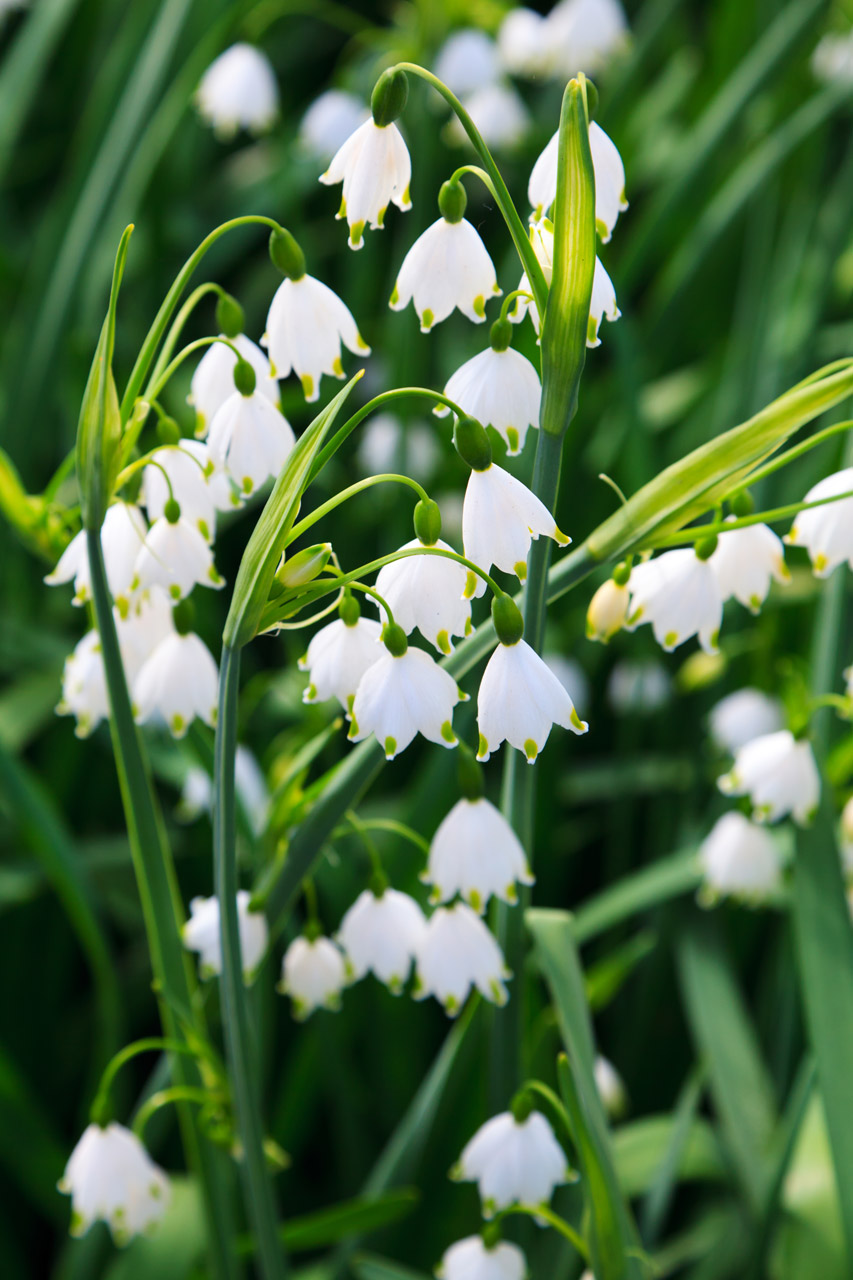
Spring snowflake flowers (leucojum vernum).